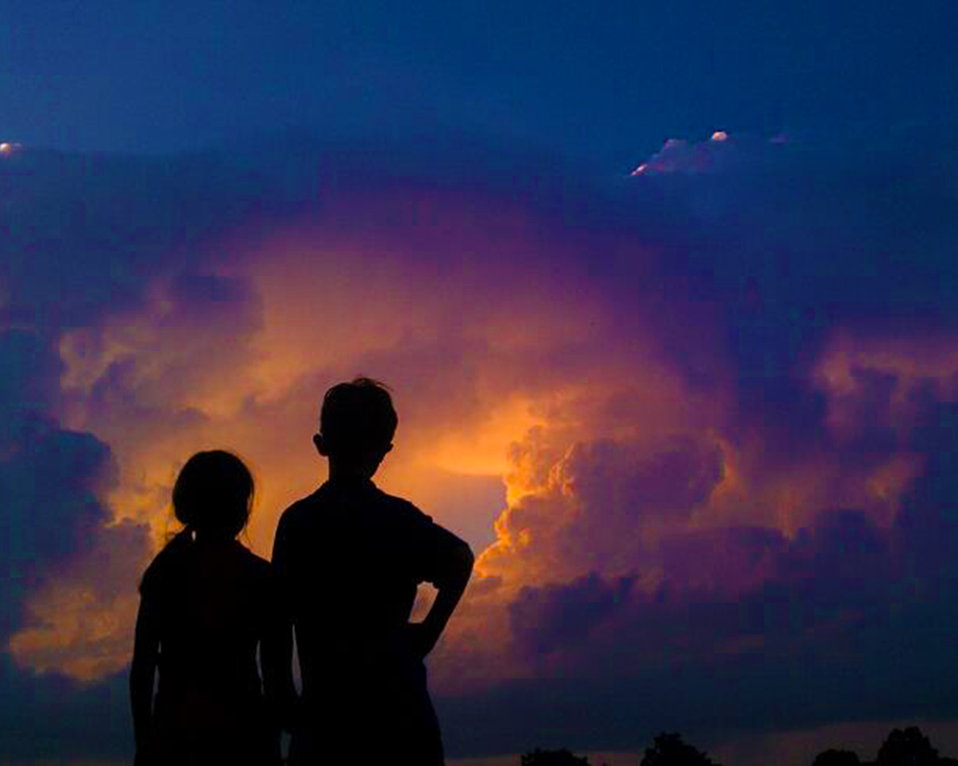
Summer storm clouds form over Columbia, MO